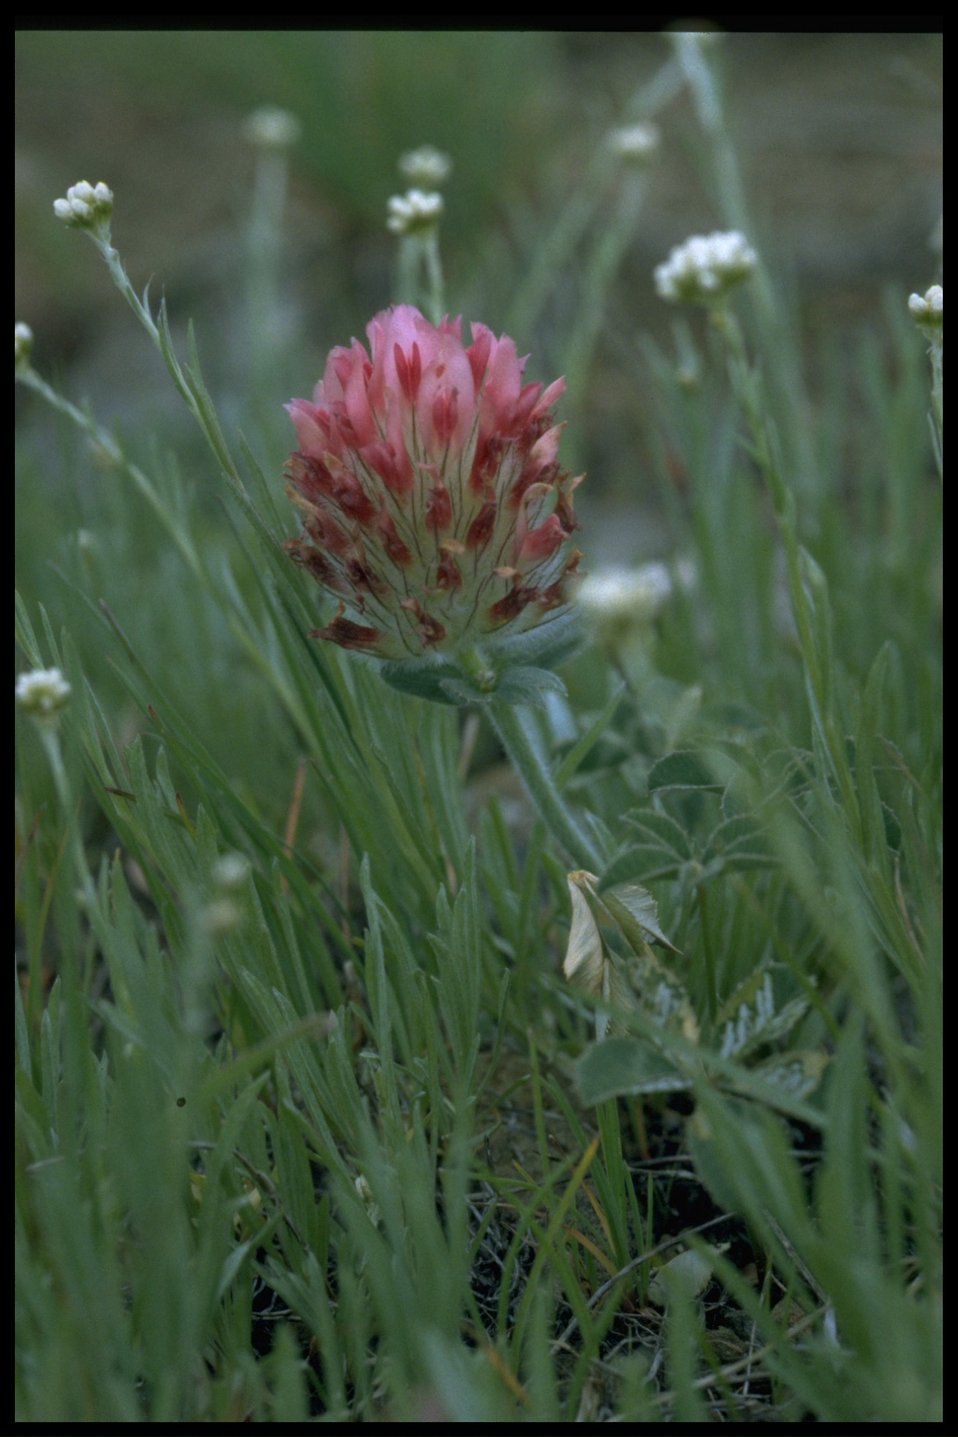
Medium shot of bighead clover (Trifolium macrocephalum).